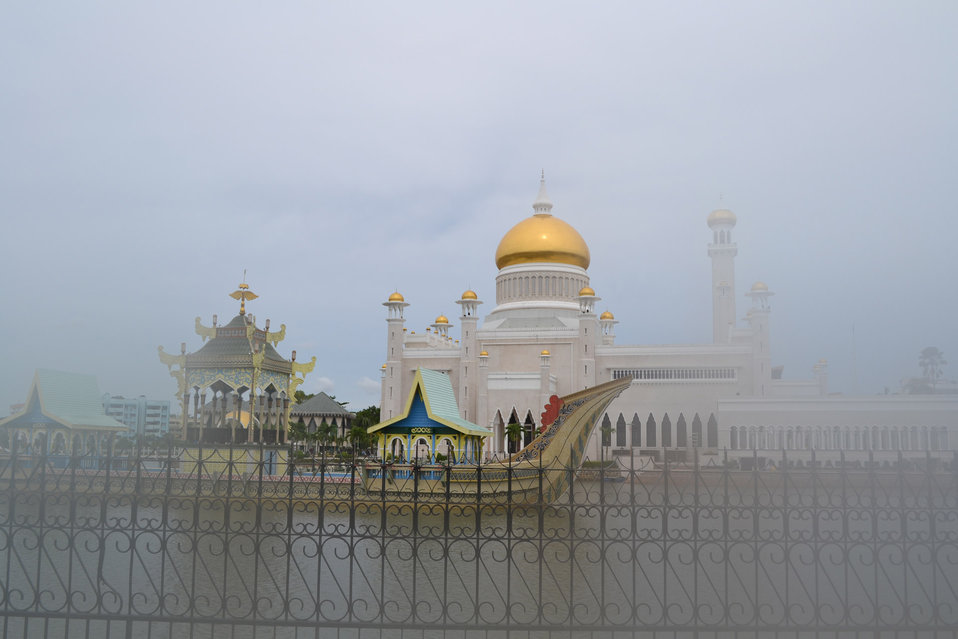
Sultan omar ali saifuddin mosque.